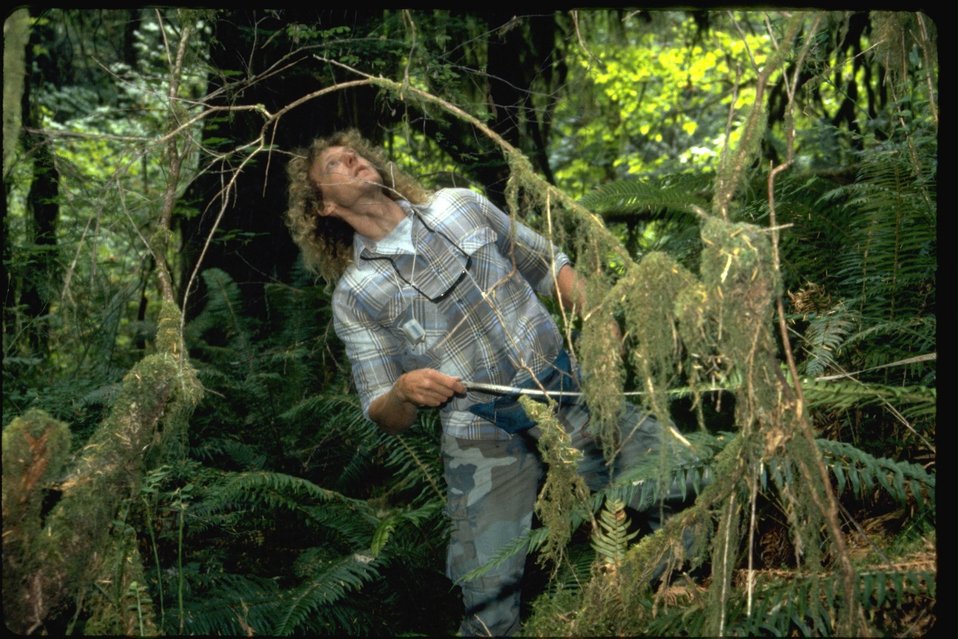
Craig conducting timber volume measurements.